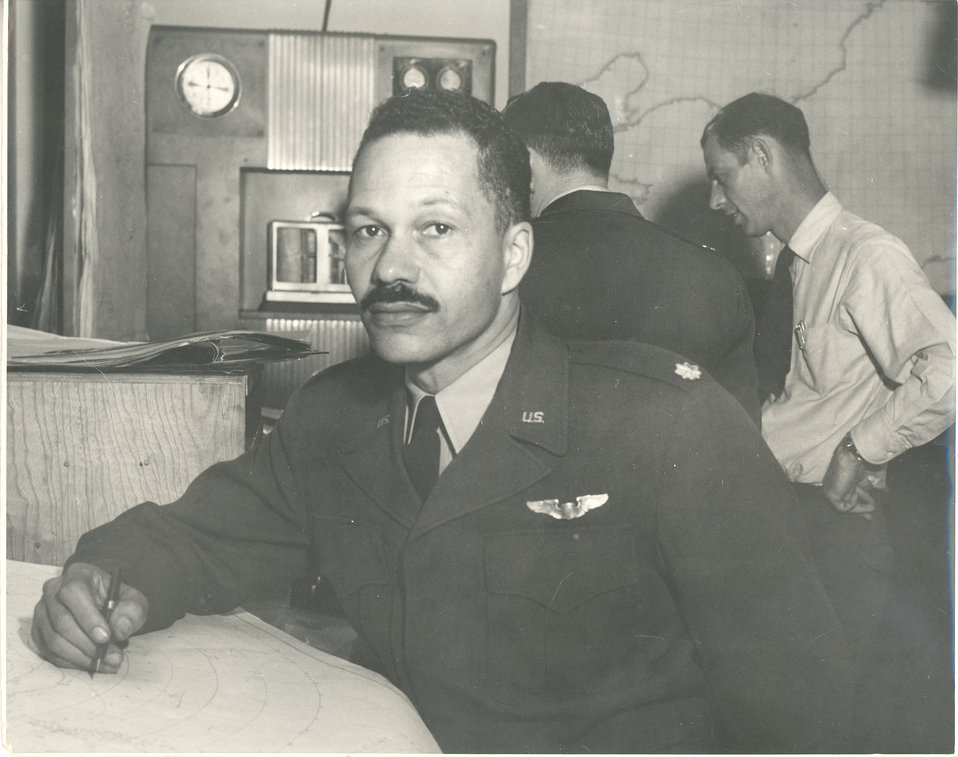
Archie Williams went on to become a weather officer in the Air Force